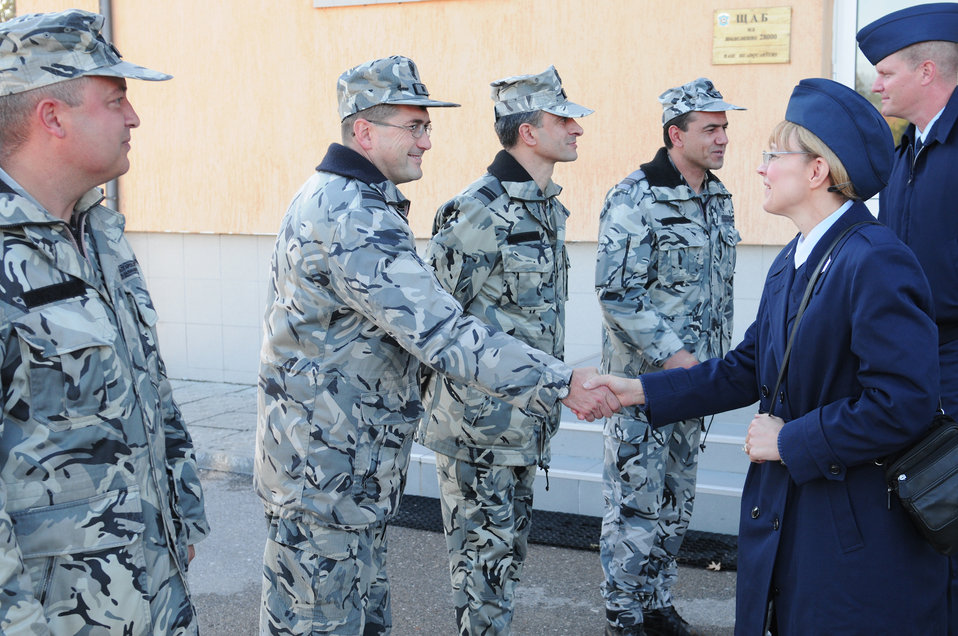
USAFE command chief builds partnership in Bulgaria

Chief Master Sgt. Pamela Derrow is greeted by Bulgarian air force leadership at Graf Ignatievo Air Base, Bulgaria Nov. 2-6, 2009. Chief Derrow spent the week meeting with Bulgarian air force leaders, and talking about how enlisted force development can help both countries, as NATO members, better perform their assigned missions. Chief Derrow is the USAFE command chief.